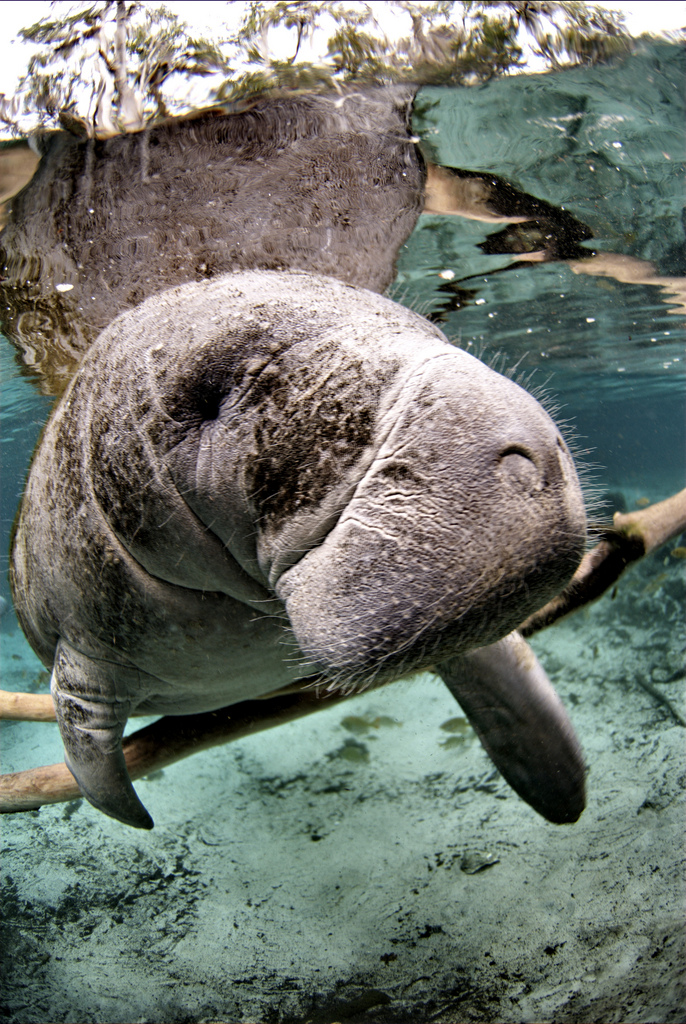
Endangered Florida manatee (Trichechus manatus)

Photo credit: David Hinkel

The Crystal River National Wildlife Refuge, was established in 1983 specifically for the protection of the endangered West Indian Manatee. This unique refuge preserves the last unspoiled and undeveloped habitat in Kings Bay, which forms the headwaters of the Crystal River. The refuge preserves the warm water spring havens, which provide critical habitat for the manatee populations that migrate here each winter.